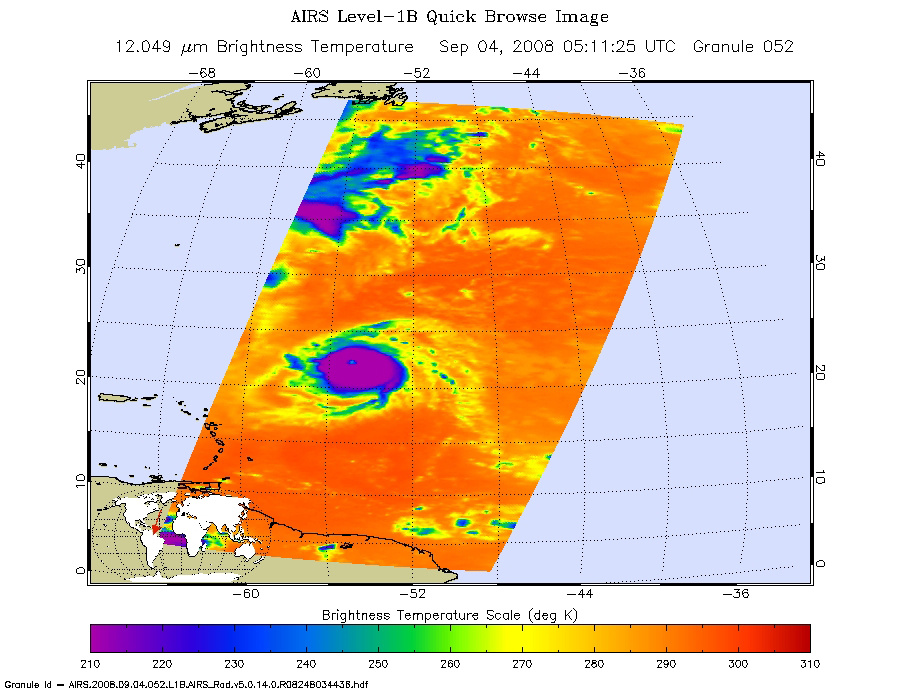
September 4, 2008: Unlikeable Ike Looms Large